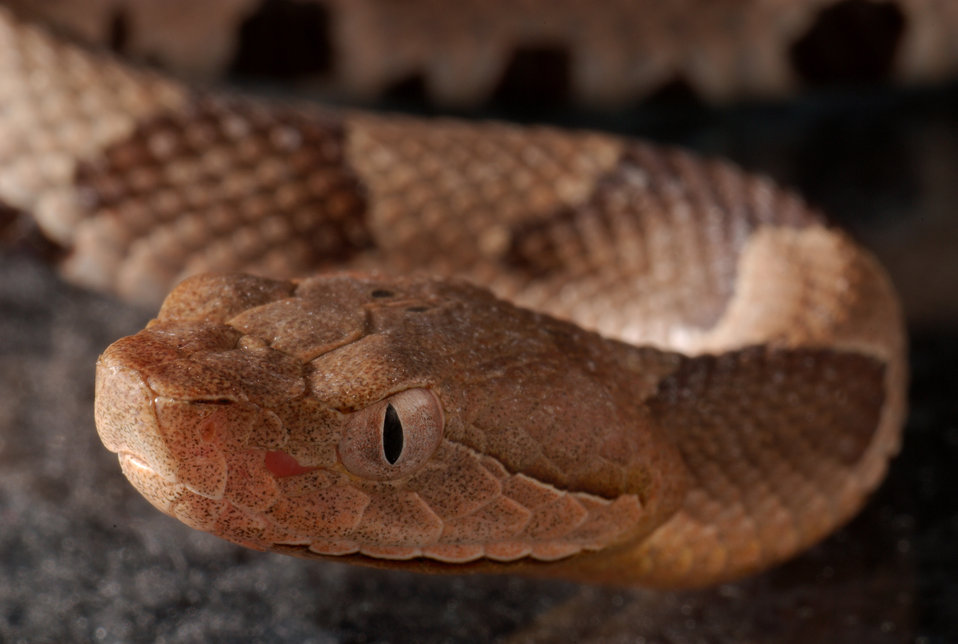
This 2008 photograph depicted a juvenile venomous 'Southern copperhead' snake, Agkistrodon contortrix, as it was coiled in a Decatur, Georgia basement.